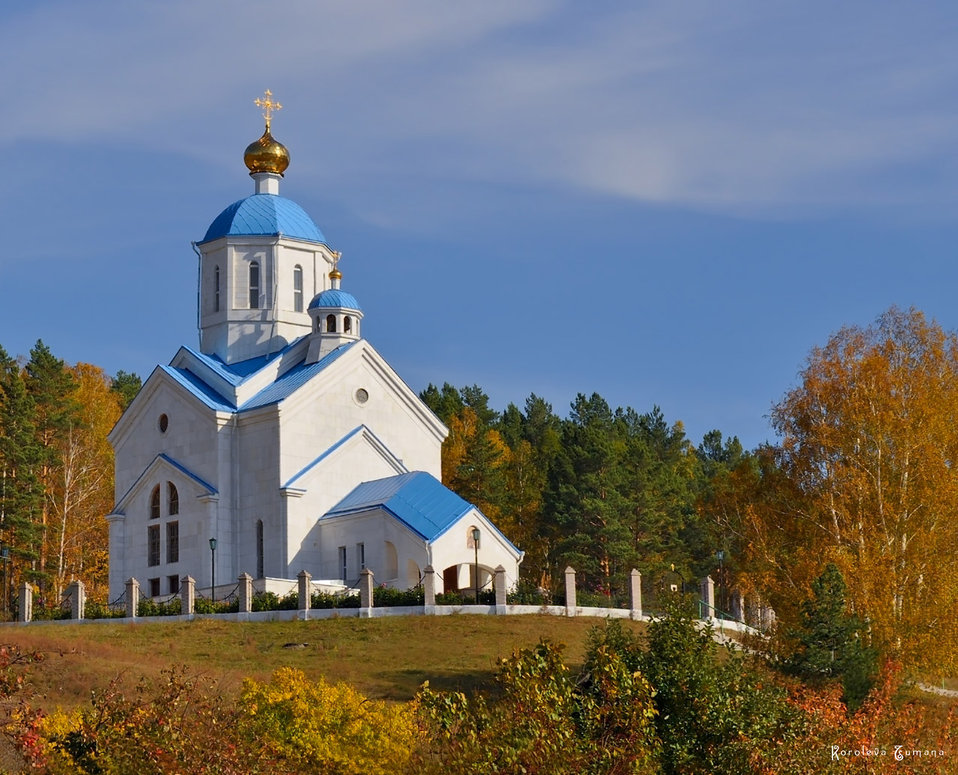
The orthodox church with the sky and the forest.